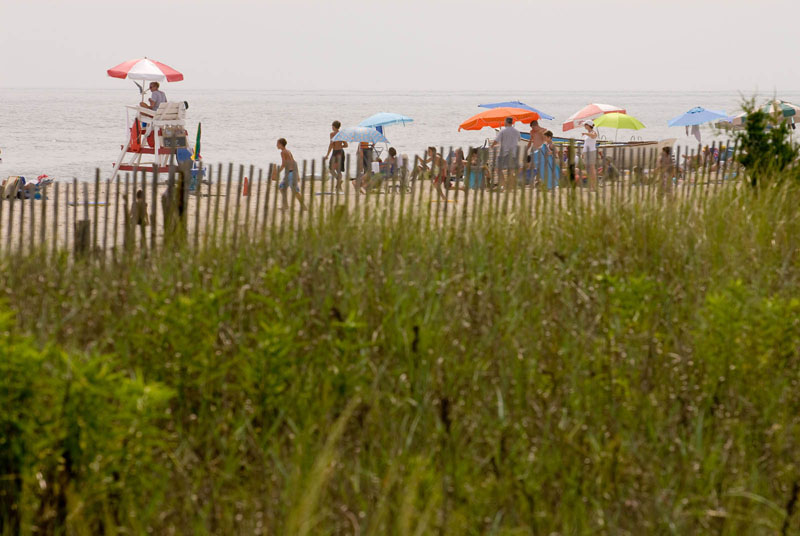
Cape May, NJ. Public Beach. 2007 USEPA photo by Ron Slotkin.